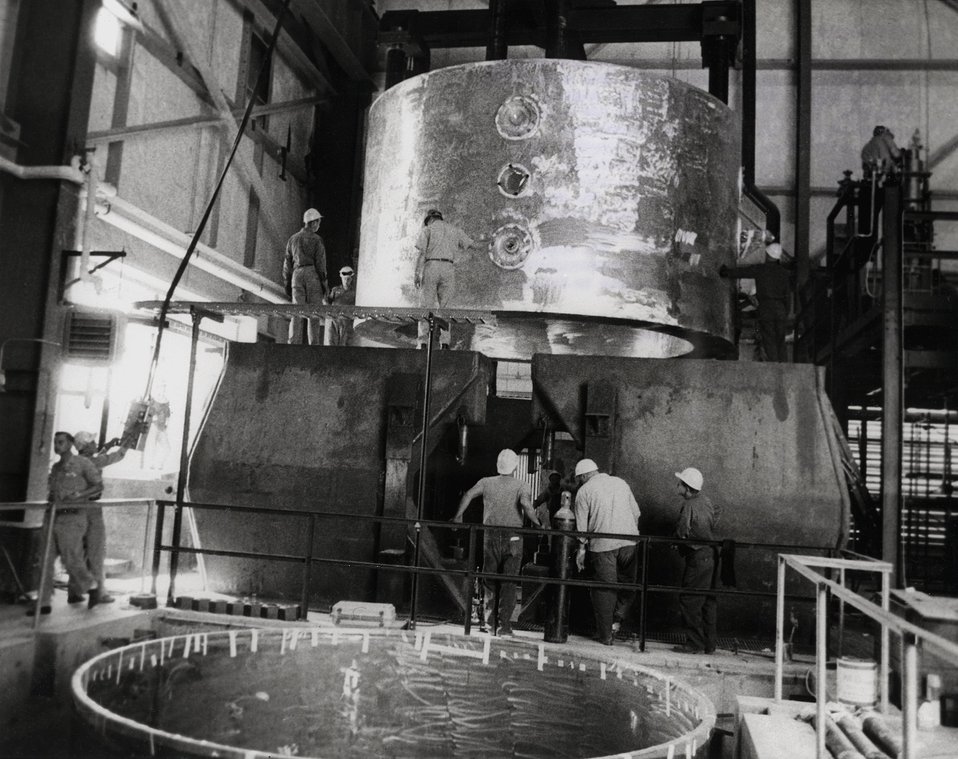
Coils of the world's largest superconducting magnet are lowered into their steel yoke at Argonne.
c.1969